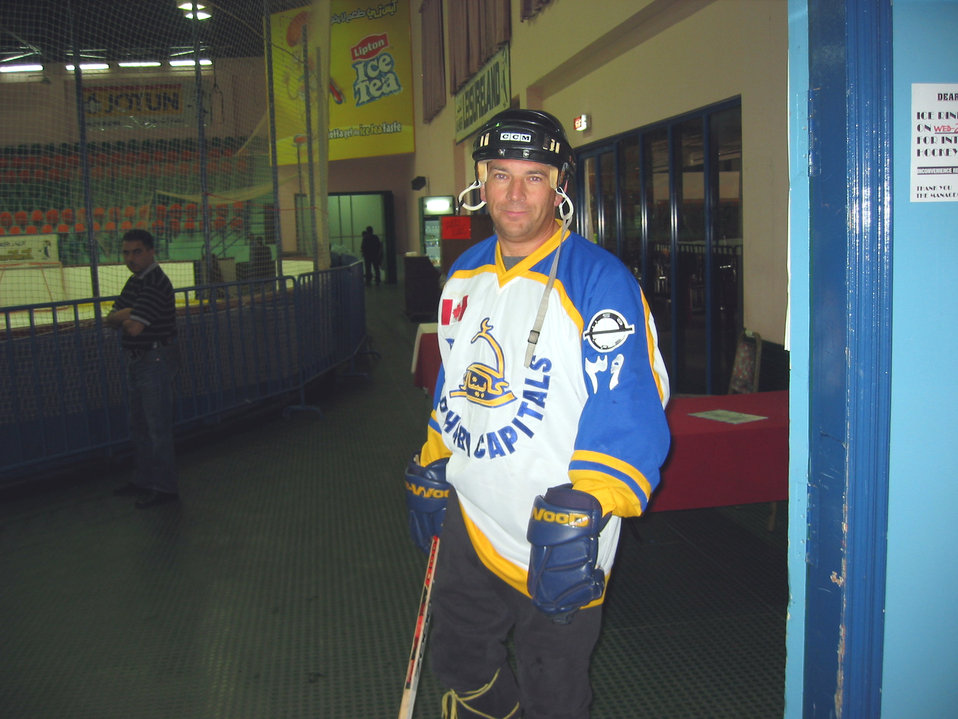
Ice hockey in the desert

SOUTHWEST ASIA -- Senior Master Sgt. Daniel Morin prepares to take the ice during a hockey game. He is the 380th Expeditionary Maintenance Operations Squadron's quality assurance superintendent at a forward-deployed location.